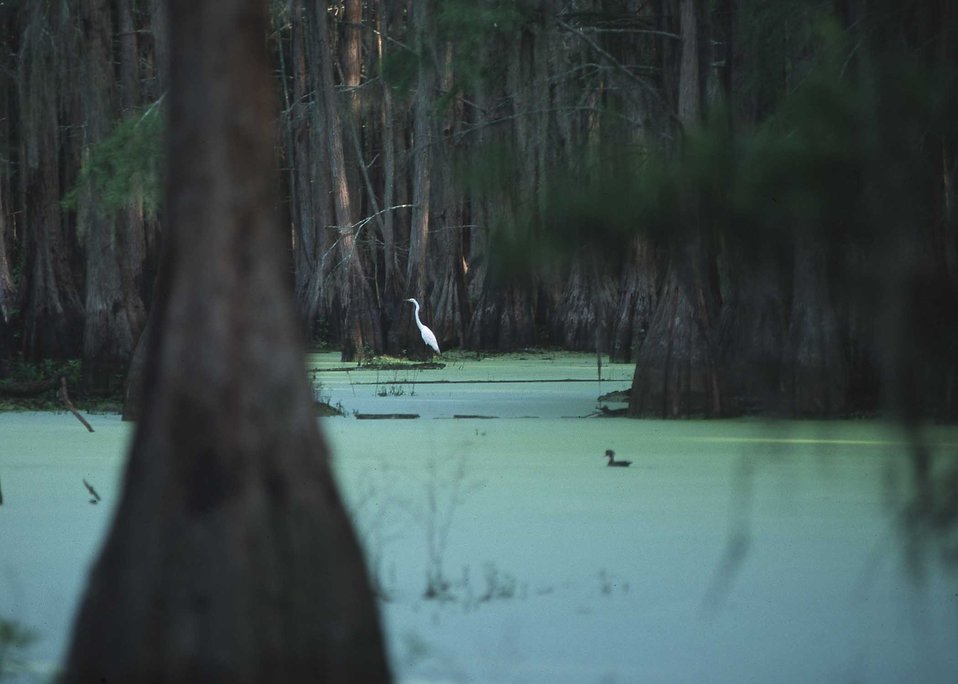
Georgia cypress bay.